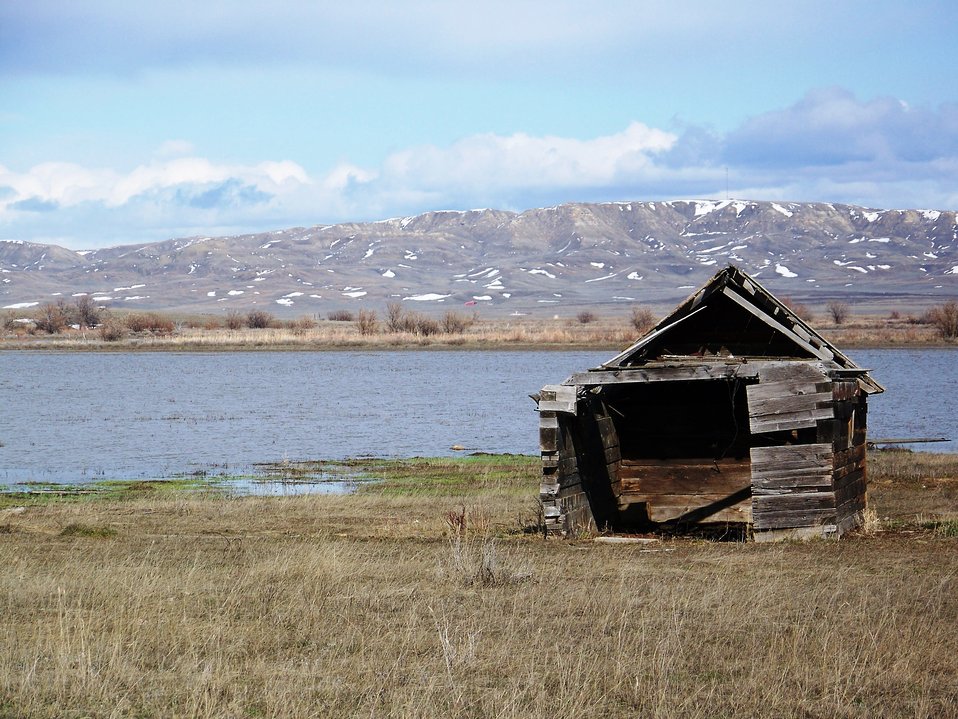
Big Sky Country, Bowdoin WMD

An early settlers home south of Bowdoin NWR